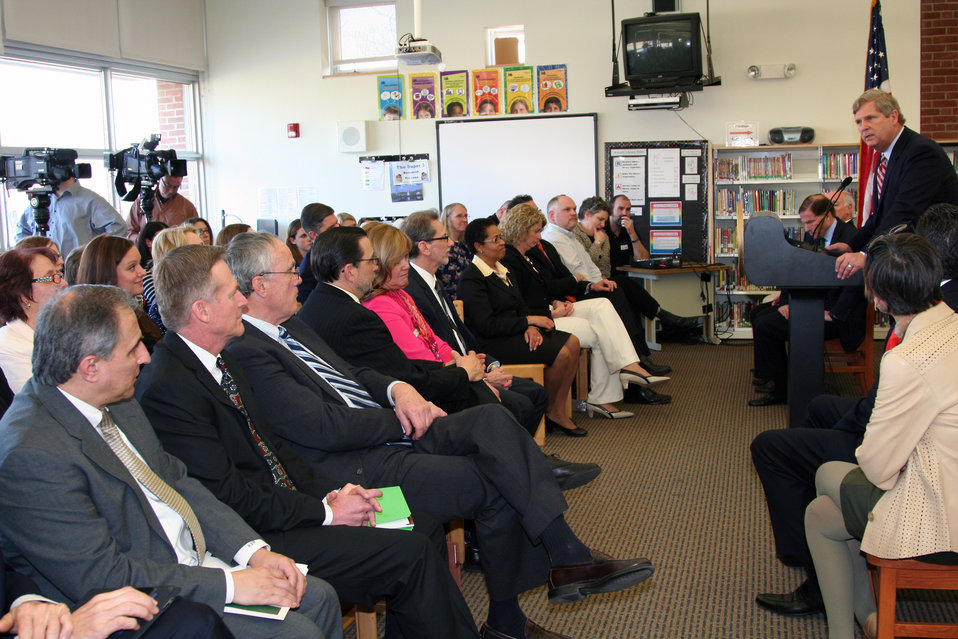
Agriculture Secretary Tom Vilsack outlines USDA efforts to raise a healthier generation of Americans and highlights efforts to improve school meals during his visit to the Henry A. Wolcott Elementary School in West Hartford, Connecticut to outline the U.S. Department of Agriculture (USDA) efforts to raise a healthier generation of Americans on Friday, April 5, 2013.